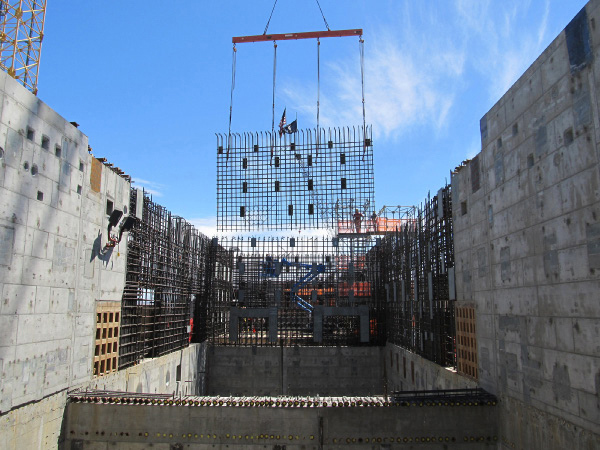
Pretreatment Rebar Curtain (July 2011)

Recently, crews lifted a 36-by-22-foot rebar curtain above the 77-foot elevation at the Vit Plant’s Pretreatment Facility. Weighing nearly nine tons, the curtain is the last to compose the facility’s fifth concrete elevation and make up the main facility walls. At this time, construction of the Pretreatment Facility is more than 36% complete.